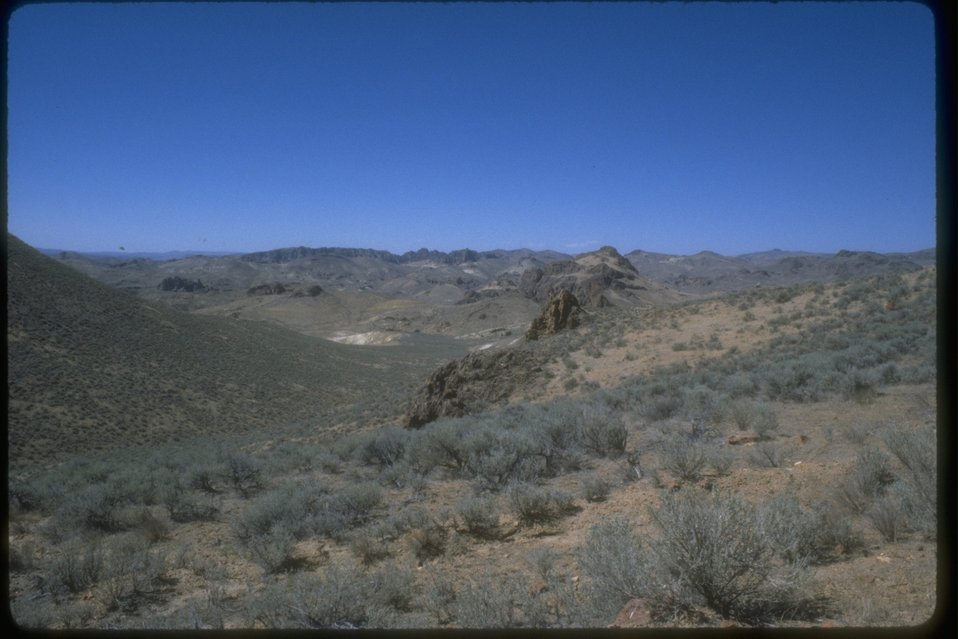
The Honey Combs viewed from Leslie Gulch.